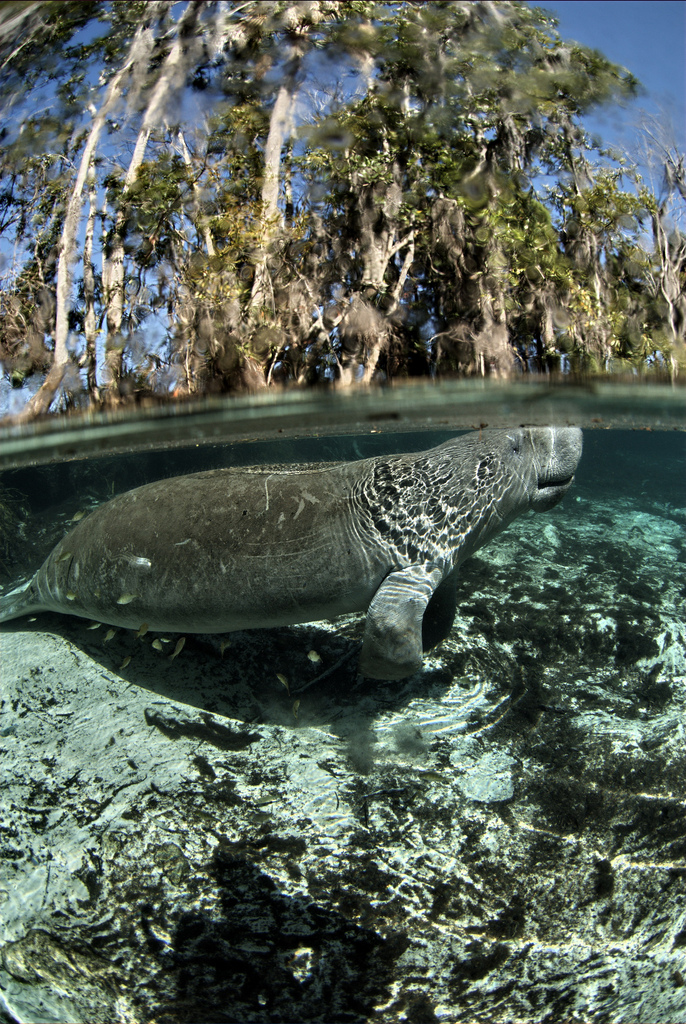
Endangered Florida manatee (Trichechus manatus)

Photo credit: David Hinkel

This manatee pushes off with his flippers while sleeping to breathe before sinking to the bottom again. While sleeping they can hold their breath for 15 minutes before breathing again.

The Crystal River National Wildlife Refuge, was established in 1983 specifically for the protection of the endangered West Indian Manatee. This unique refuge preserves the last unspoiled and undeveloped habitat in Kings Bay, which forms the headwaters of the Crystal River. The refuge preserves the warm water spring havens, which provide critical habitat for the manatee populations that migrate here each winter.